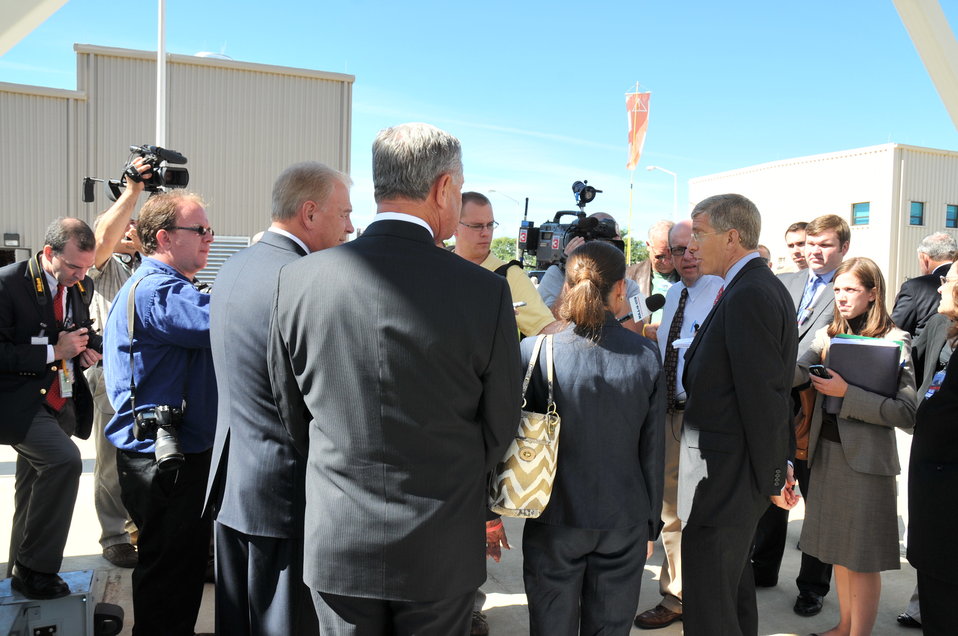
Deputy Secretary Poneman participates in a media availability, along with Ohio Governor Ted Strickland, Congresswoman Jean Schmidt and Congressman Charlie Wilson, as part of a ceremony on September 9 to recognize the start-up of hot functional testing operations at the Depleted Uranium Hexafluoride Conversion Plant in Piketon, Ohio.